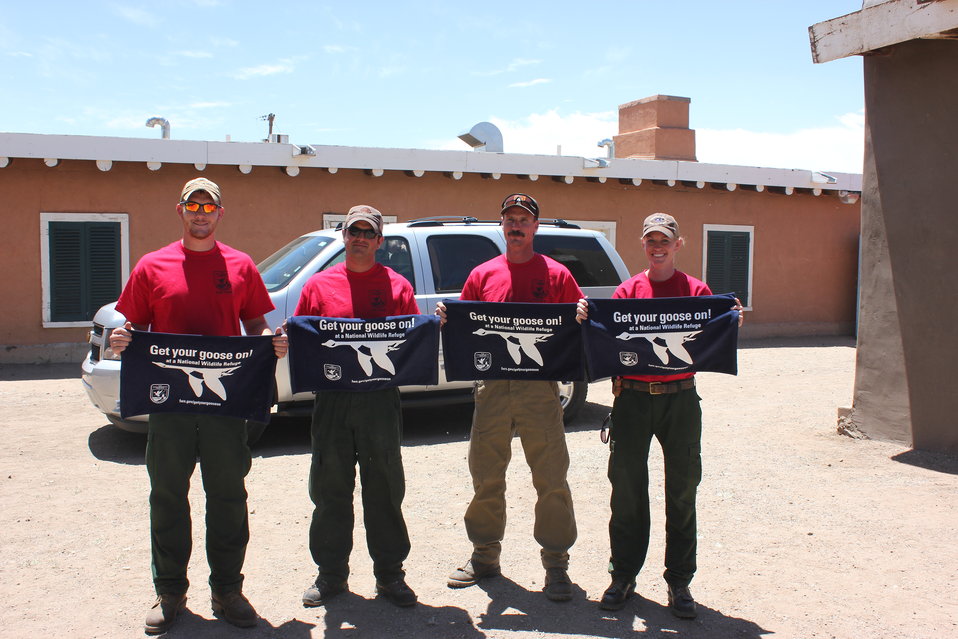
Fire Crews Like to Get Their Goose On! Too